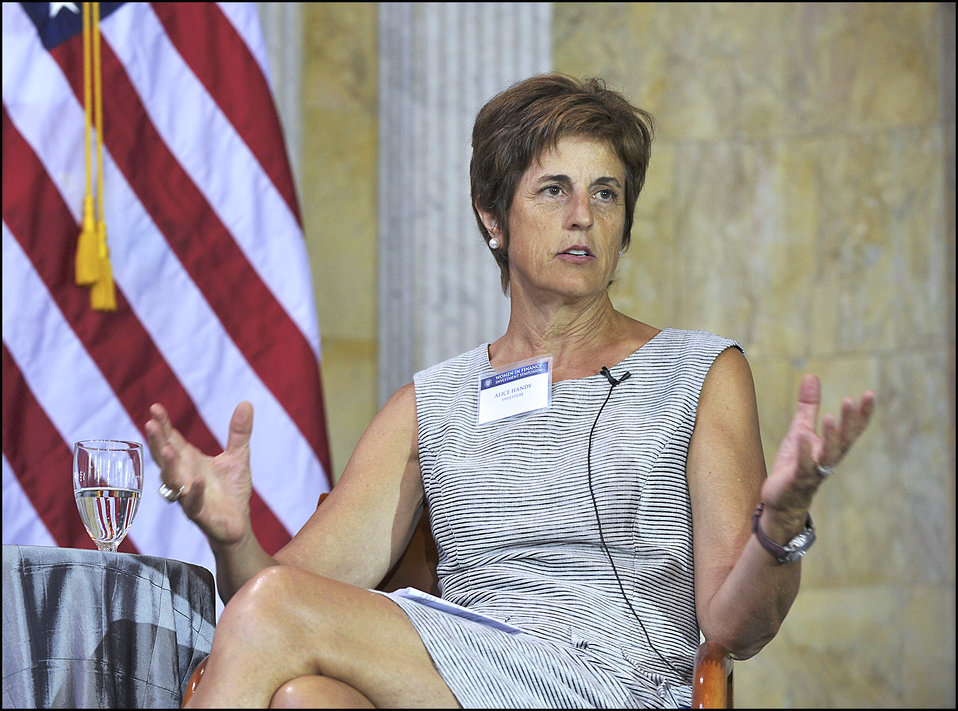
Women in Finance Investment Symposium

Alice Handy, Founder and President,co-CIO, CCO, Investure, spoke on the first panel, titled 'Adapting and Innovating in the Financial Markets.'